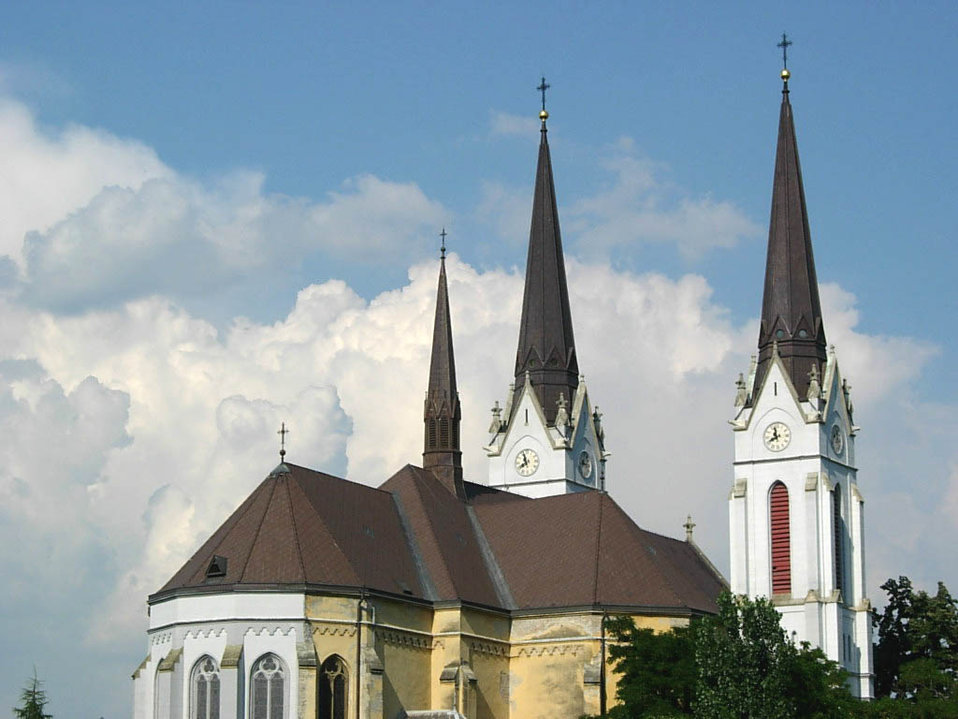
Sacred Heart Catholic Church (west view) in Futog, Vojvodina, Serbia - 20060602